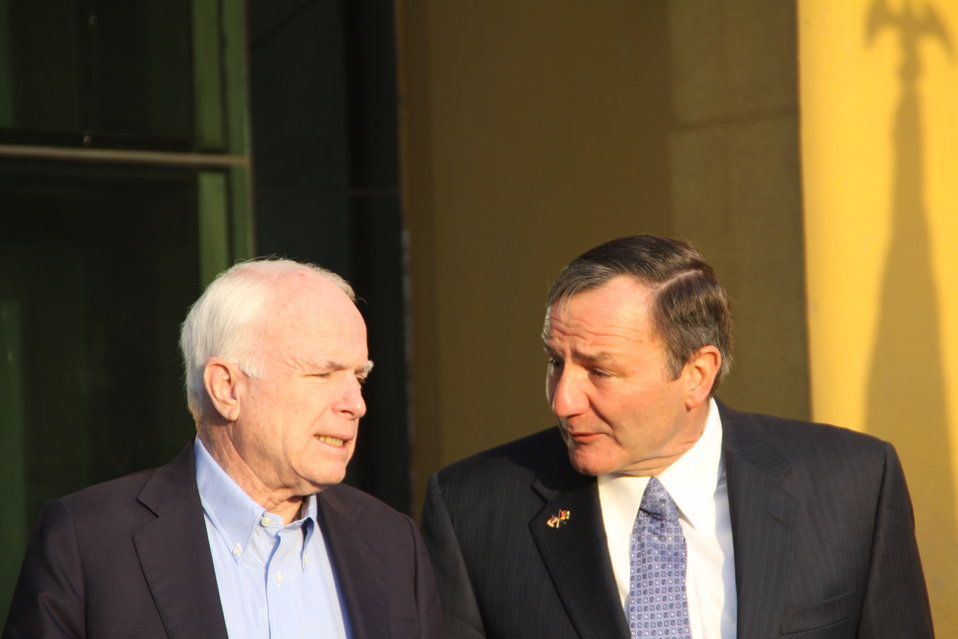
Senator McCain and Ambassador Eikenberry